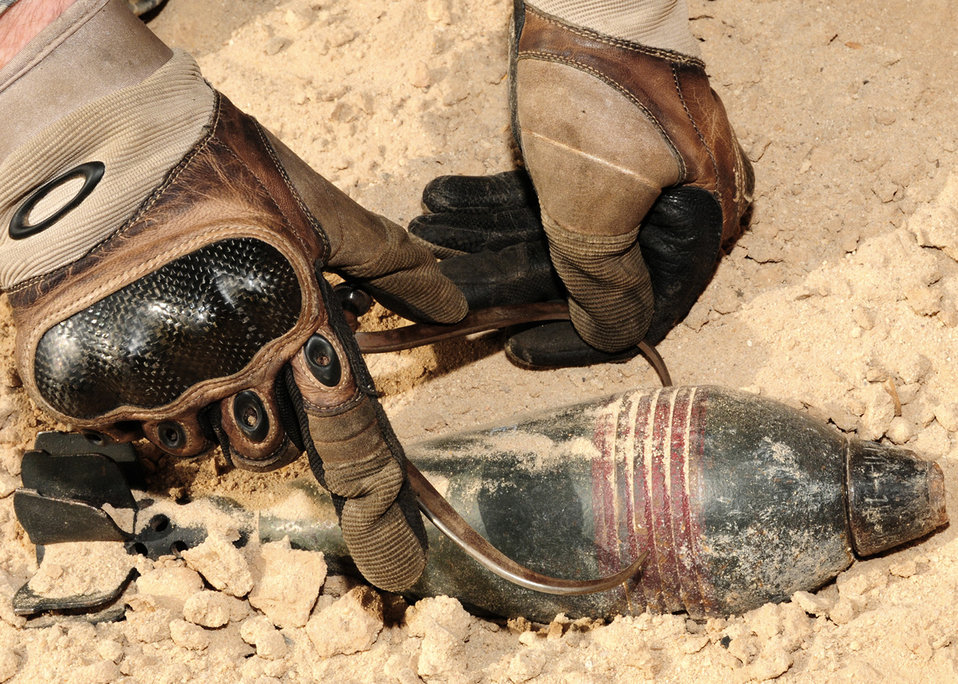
Handle with care

An Airman measures simulated unexploded ordnance with a caliper during training May 27 at an air base in Southwest Asia. Once the measurement it taken it is checked against a UXO reference book for identification.